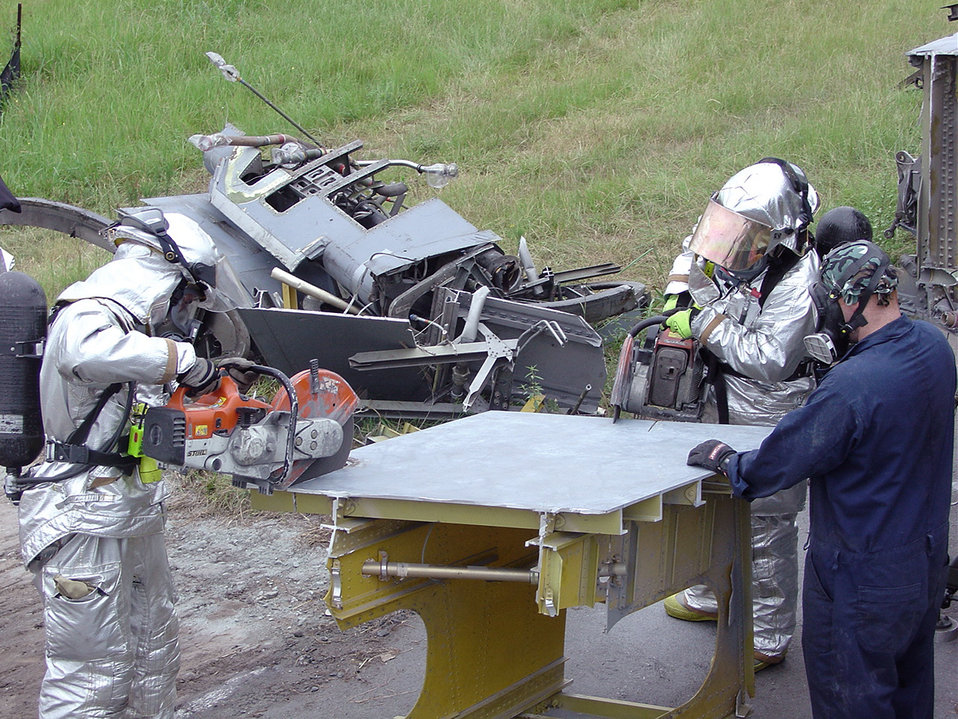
Airmen train firefighters to saw through aircraft parts

ROBINS AIR FORCE BASE, Ga. (AFPN) -- Staff Sgt. Paul Hockaday (right) trains firefighters to use a K-12 cut-saw. The saws are used by 653rd Combat Logistics Support Squadron Airmen to demilitarize and dismantle aircraft, but are also used in cases of aircraft emergencies.